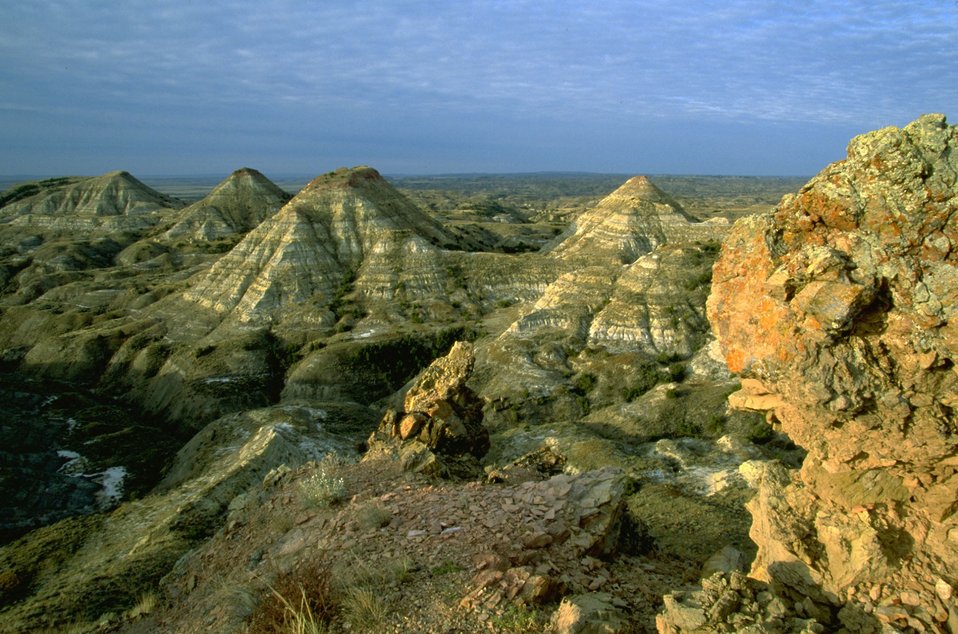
Terry Badlands Wilderness Study Area